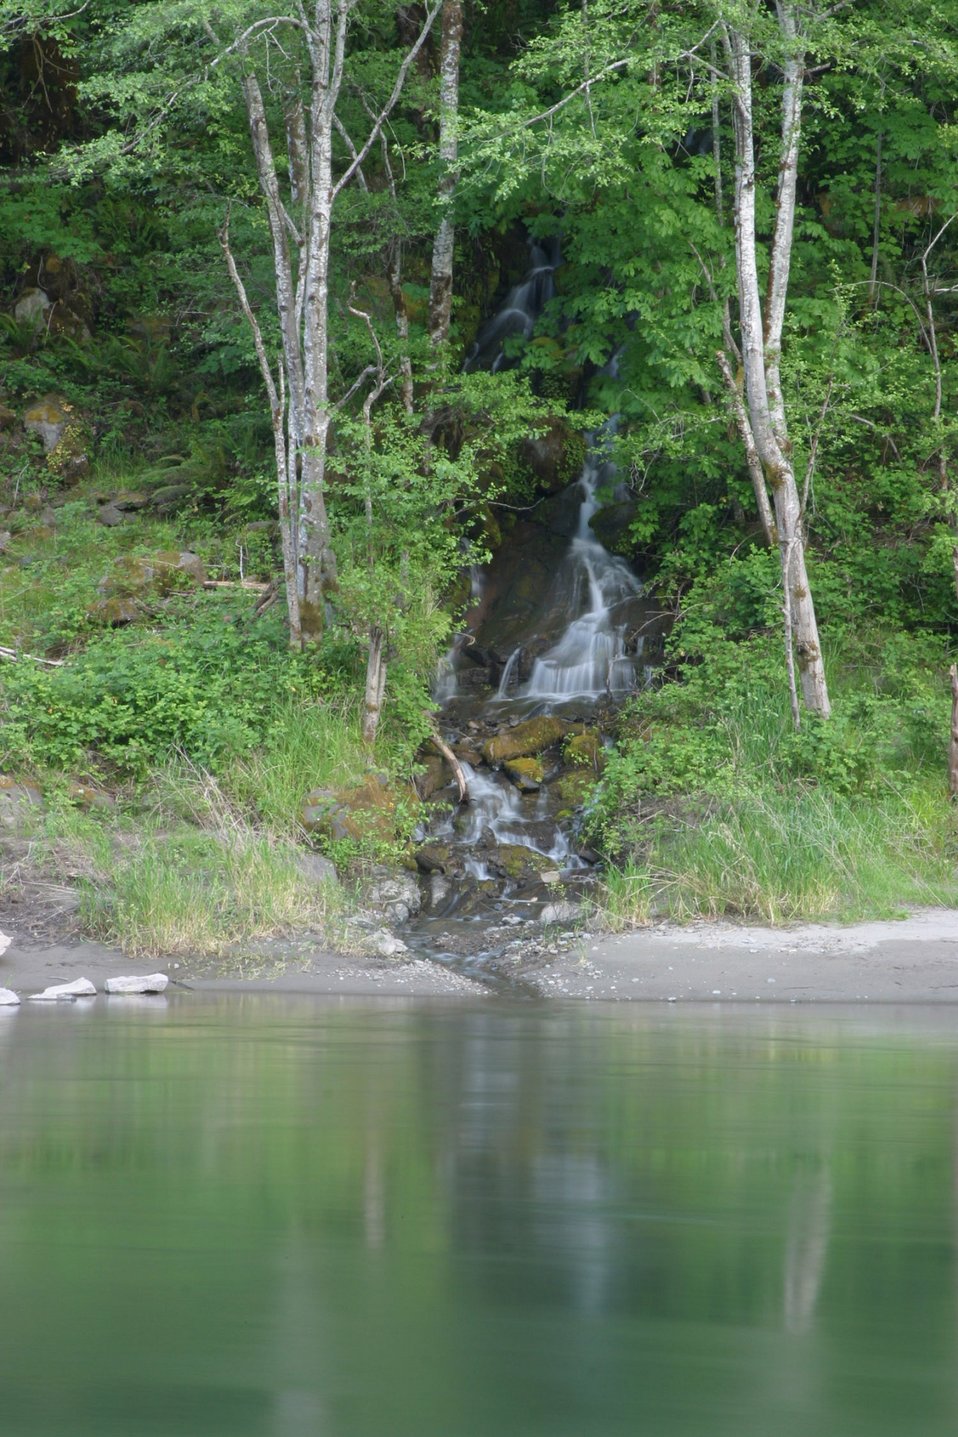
Wild section of the Rogue River from Grave Creek to Foster Bar May 19 to May 22.